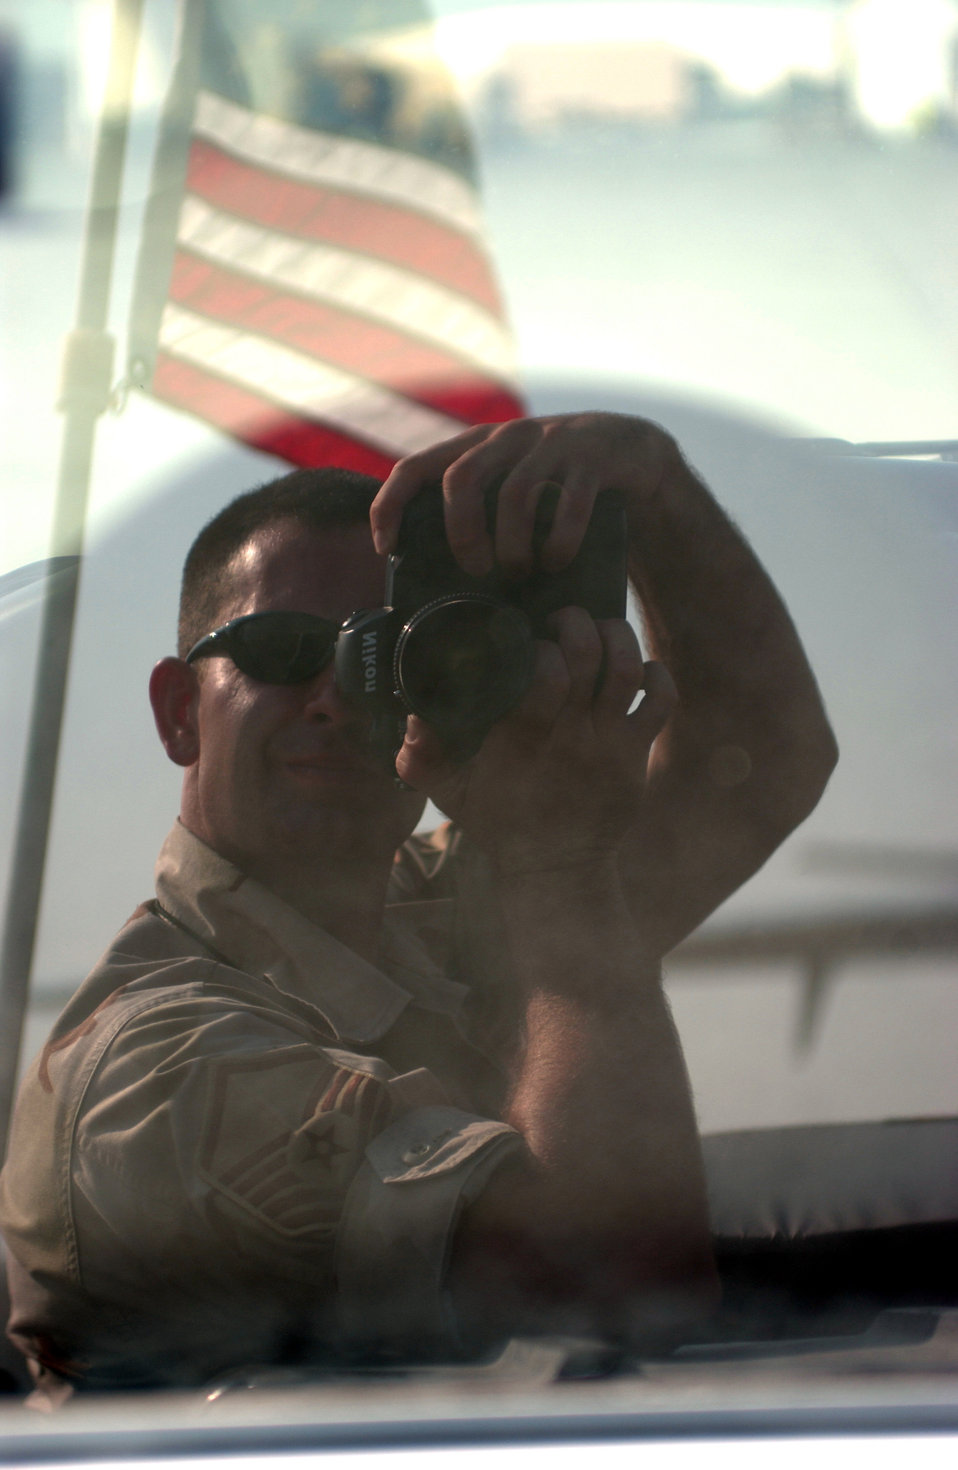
A reflection of myself

SOUTHWEST ASIA -- Master Sgt. Shaun Withers takes a picture of his reflection here Sept. 1. Sergeant Withers is assigned to the 380th Air Expeditionary Wing deployed here from the 125th Fighter Wing, Florida Air National Guard.